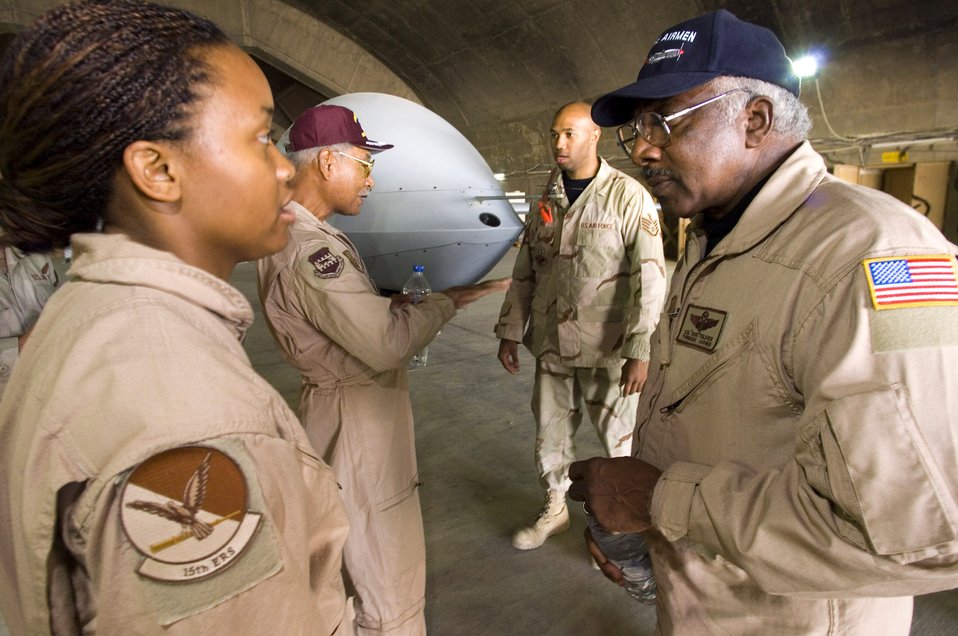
Tuskegee Airmen return to warzone

BALAD AIR BASE, Iraq (AFPN) -- Staff Sgt. Kimberly Farrell (left) talks to Tuskegee Airman retired Col. Dick Toliver (right), while Staff Sgt. Avery Ware (back right) chats with retired Lt. Col Robert Ashby (back left) here. The Tuskegee Airmen are here to meet deployed 332nd Expeditionary Operations Group Airmen and observe operations. The Army created the Tuskegee Airmen unit in 1941.